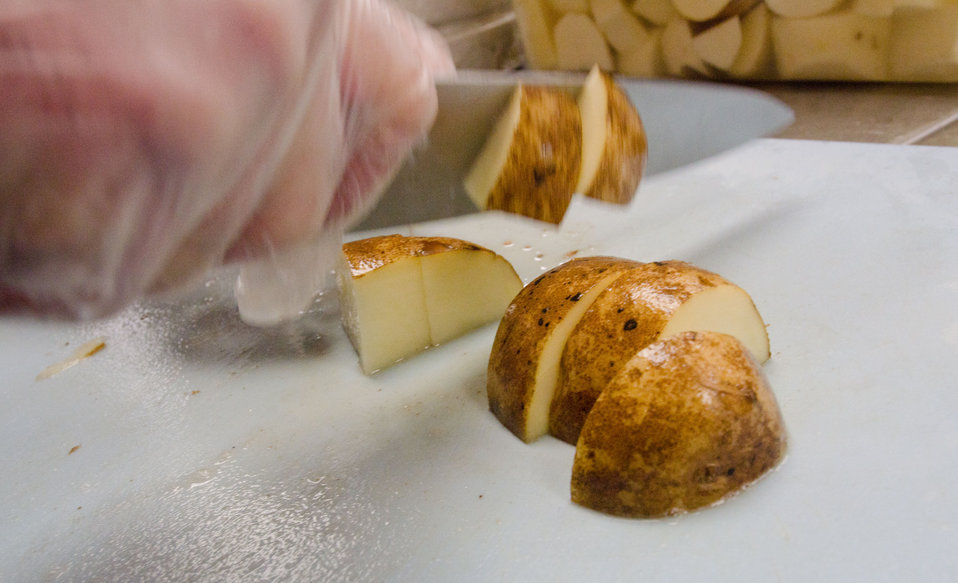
Potatoes are cut before being cooked and mashed for Kids Cafe meals being prepared by the students of Class 35, of the San Antonio Food Bank (SAFB) Community Kitchen program in San Antonio, TX, on Monday, October 31, 2011. Other meals prepared by the Community Kitchen include the U.S. Department of Agriculture (USDA) Summer Food Service Program for children during summer months, and the year-round Child and Adult Care Feeding Program (CACFP). The Community Kitchen trains the unemployed, feeds the hungry, and generates public support and revenue through social enterprise. They began creating meals in 2003, with volunteers and the Community Kitchen students looking to further themselves in a promising culinary career. Over 16-week course individuals receive basic culinary training, similar to portions of an accredited culinary institution, to develop their culinary job skills. The program is lead by Chef Rudy Garza and his team of instructor chefs, present training and work demands that build useful job skills. The students focus their new talents on the preparation of meals for area shelters, kids cafes, summer feeding sites (www.summerfood.usda.gov/), and catering services. The San Antonio Food Bank is a non-profit organization that serves as a clearinghouse by receiving and storing truckloads of donated food, produce, and other grocery. SAFB distribute these items to over 500 service agencies that help people in need.

“We couldn’t do what we do without our partnership with USDA’” said President and CEO Eric Cooper. He continues, “We are privileged in partnering (with the USDA) to feeding kids, through the summer, with the Summer Food Service Program, and throughout the year, with the Child and Adult Care Feeding Program (CACFP). Then in our approach to feeding seniors, we partner with USDA in the Commodities Supplemental Food Program (CSFP), and the Senior Farmer’s Market (Nutrition) Program. And then work to bring all our (needy) parties together with our Supplemental Nutrition Assistance Program (SNAP) Outreach. You know, once families have access to food we believe it is important to educate them. Through the support of the SNAP-Education Program we are able to educate them during their time of need. With this comprehensive approach we are really able to get the right food, at the right amount, at the right time, to needy families throughout our community – which allows us to feed the fifty-eight thousand we do, each week.”
SAFB serves 16 counties in Southwest Texas and states, “Nearly one out of every four children and one out of every five adults in Southwest Texas lives in poverty and has difficulty meeting basic nutritional needs.” According to SAFB, sixty-five percent of the people requesting emergency food have children. “Additionally, the senior citizens and those living on a fixed income generally have limited funds for a consistent grocery budget.”
San Antonio is the seventh largest city in the nation with surrounding farms and ranches near its rivers and water supplies. When available they provide fresh surplus produce. Other commodities come from the food industry and manufacturers. The major food brand companies that for various reasons have surplus commodities donate it to SAFB.
The United States Department of Agriculture donates commodities through programs such as The Emergency Food Assistance Program (TEFAP), while Texas farmers supply fresh produce to their Fresh Produce Program.
Public donations come in the form of money, food, volunteer time, and advocacy. Their fleet of trucks to pickup and deliver food as needed.